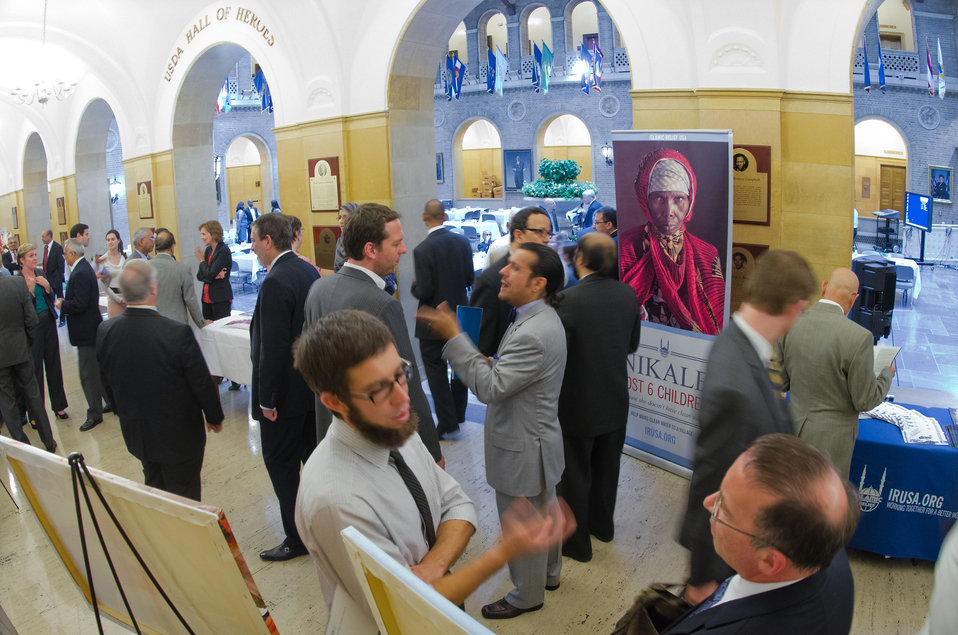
Guests meet each other outside the patio and had an opportunity to view Ridwan Adhami's photography exhibit 'Scars and Smiles' at the Iftar event, co-sponsored by the Iftar celebration, co-sponsored by the U.S. Department of Agriculture, U.S. Agency for International Development (USAID) and Islamic Relief USA, on Tuesday, August 7, 2012, in the USDA Whitten Building, in Washington, D.C. Ramadan is the month of fasting, intensive prayer, sacrifice and worship for Muslims around the world. Throughout this month, Muslims fast during the day, abstaining from consuming food from dawn to dusk and using this time to purify spiritually. Fasting reminds Muslims of the poverty and hunger suffered by many in the United States and worldwide. It is a connection with those who are hungry not through devotion, but through the many global factors that lead to hunger and famine. Iftar is the meal at which Muslims break their fast at sunset, usually by eating dates, according to the Prophetic tradition.